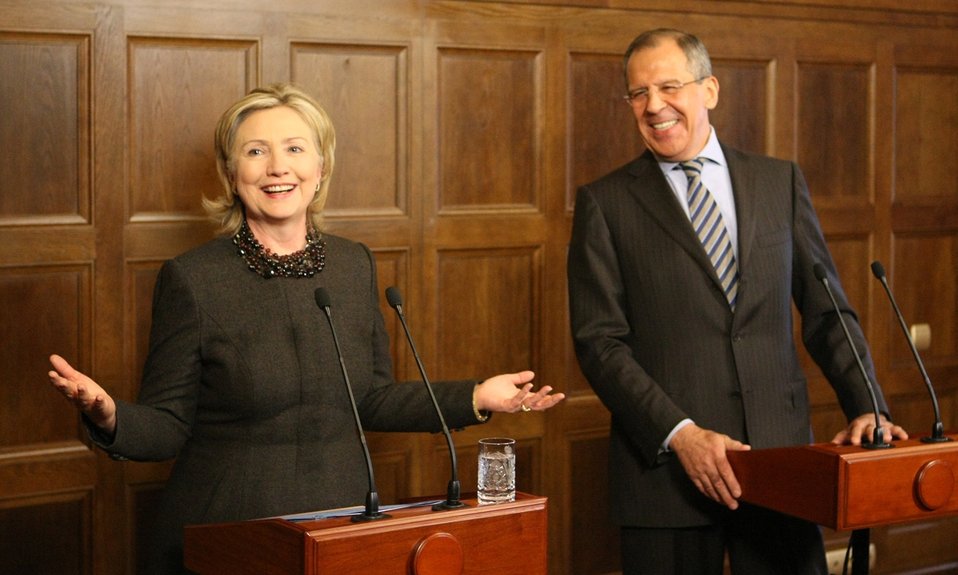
Secretary Clinton With Russian Foreign Minister Lavrov

U.S. Secretary of State Hillary Rodham Clinton and Foreign Minister Lavrov speak during a press conference in Moscow, March 19, 2010.